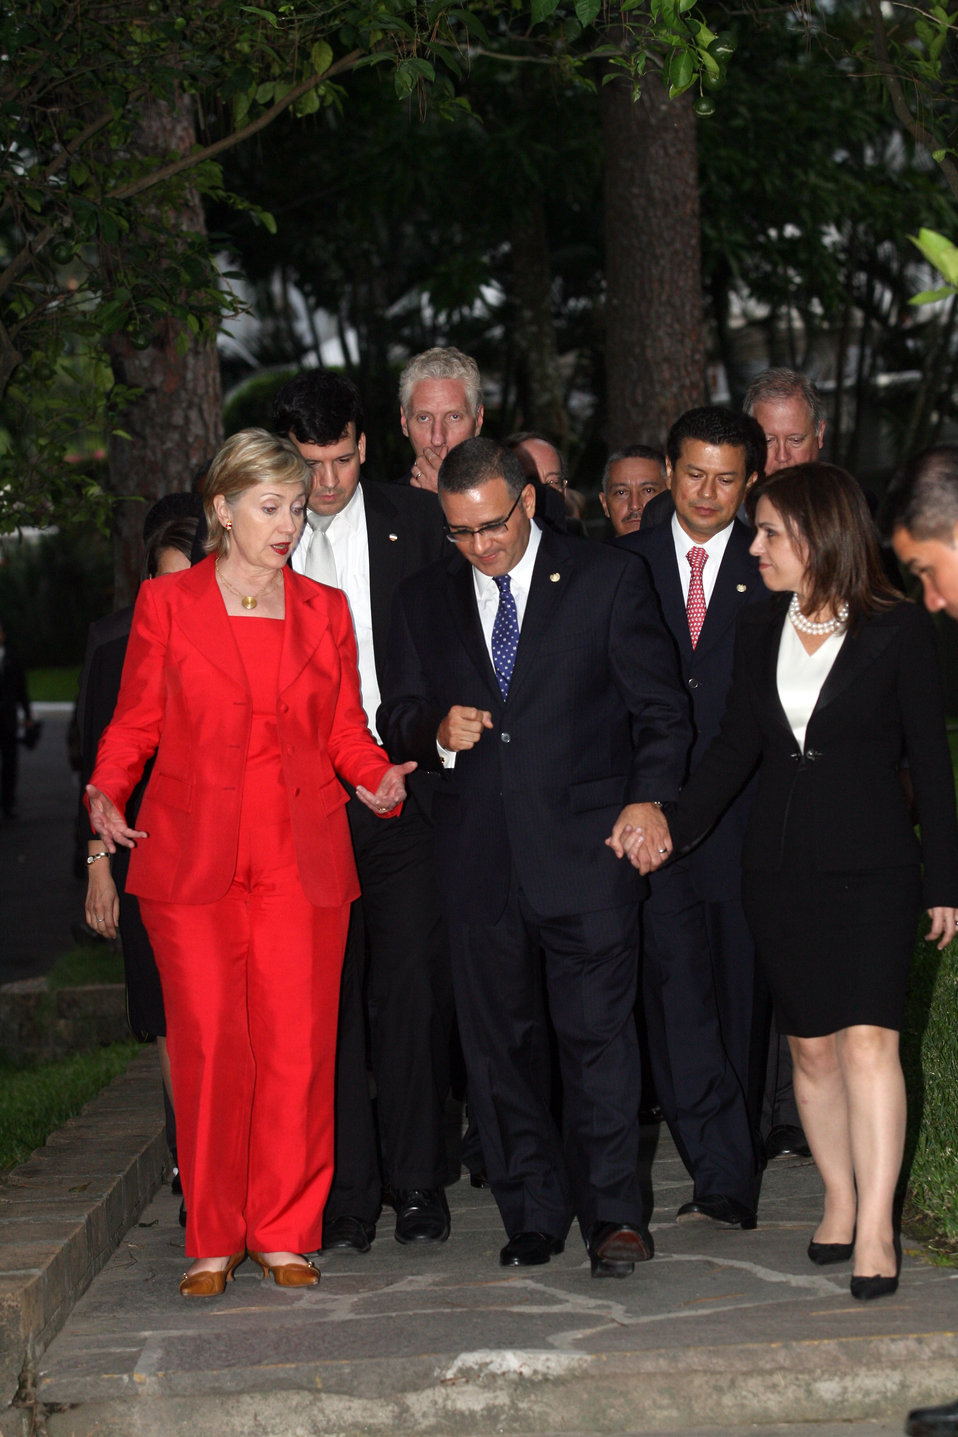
Secretary Clinton With Salvadoran President

Salvadoran President Mauricio Funes and U.S. Secretary of State Hillary Rodham Clinton walk to a press conference in the gardens of the Presidential Palace in San Salvador, El Salvador June 1, 2009.